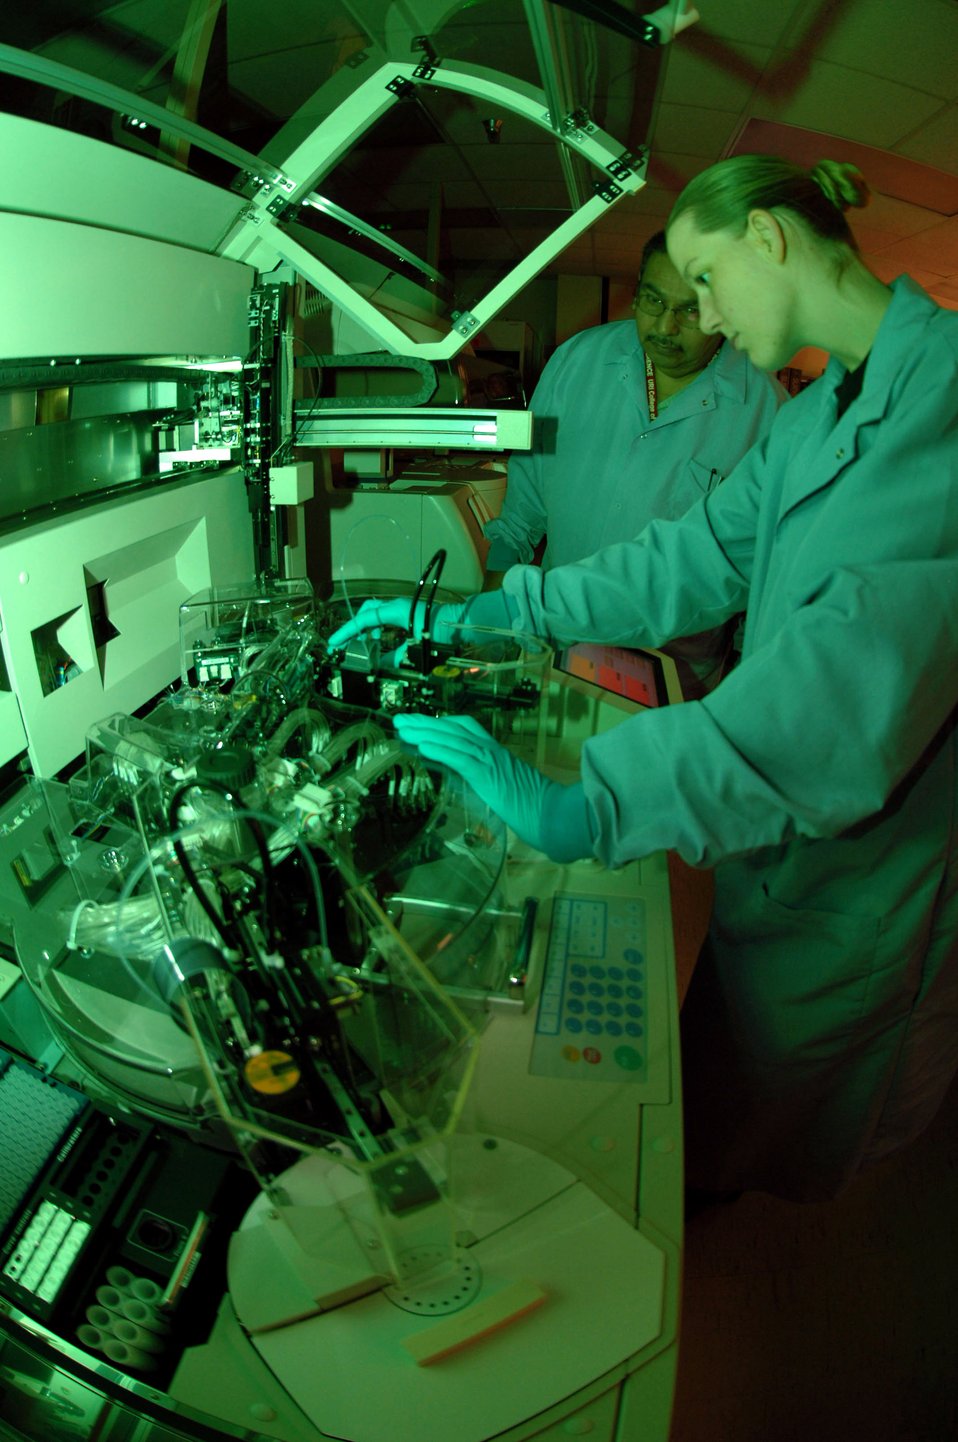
Allergy lab becomes Center of Excellence

Staff Sgt. Kristin Parsons loads reagents into allergy testing machine in the diagnostic immunology lab at Wilford Hall Medical Center, Lackland Air Force Base, Texas. The lab recently was named the Air Force's Center of Excellence for allergen testing.